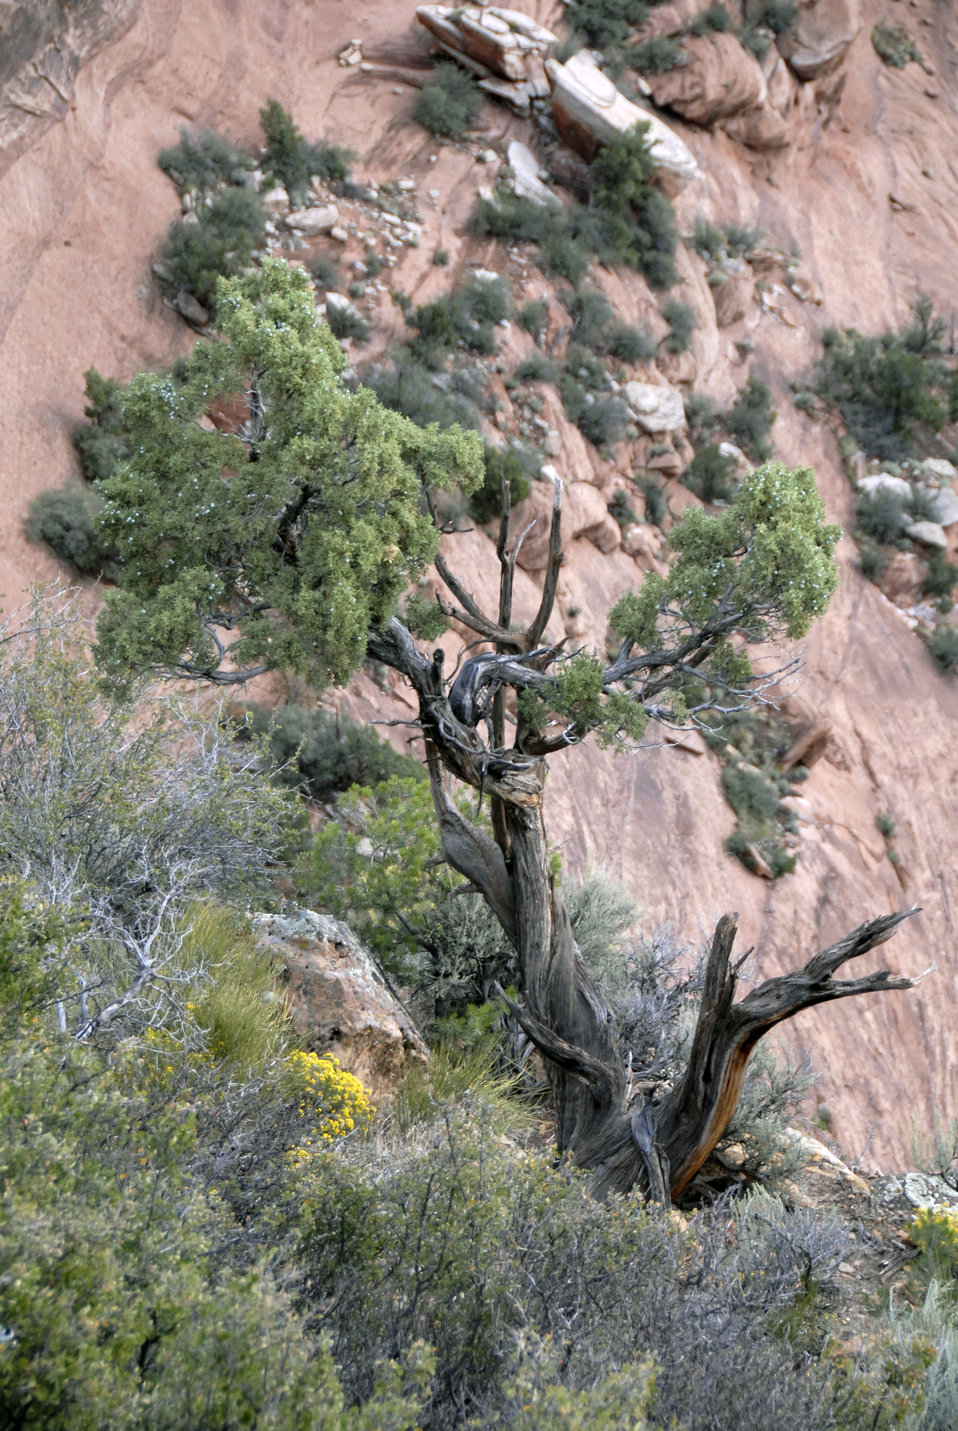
A cottonwood tree grows in Canyon de Chelly National Monument in Chinle, Arizona on September 11, 2008.